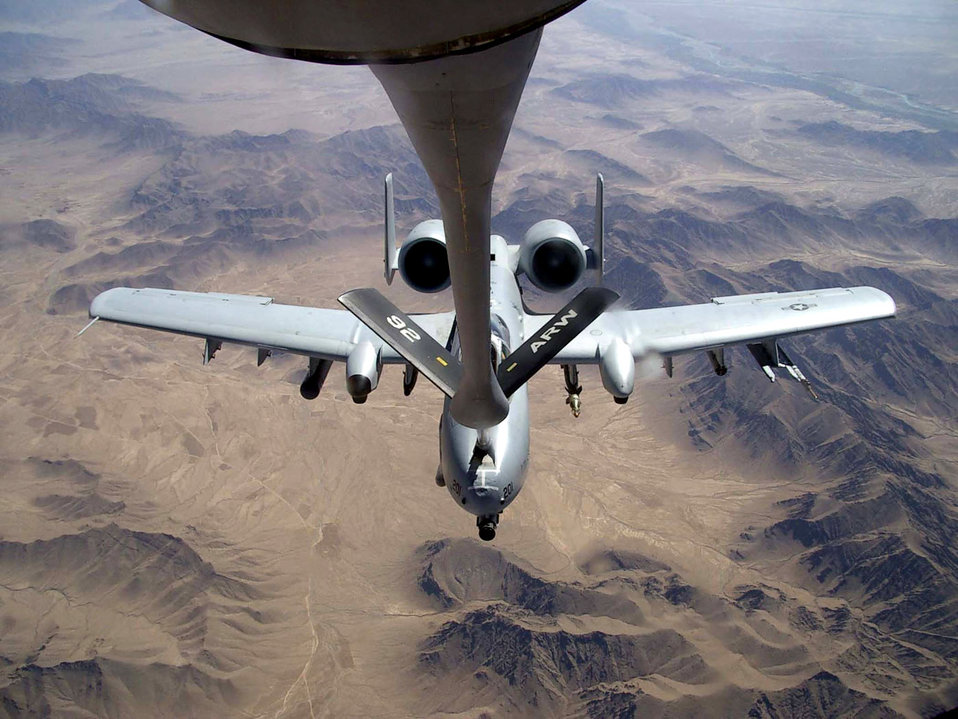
CENTAF Airpower summary for March 29, 2007

An A-10 Thunderbolt II receives fuel from a KC-135 Stratotanker from the 22nd Expeditionary Air Refueling Squadron over Afghanistan. The 22nd EARS is part of the 376th Air Expeditionary Wing, Manas Air Base, Kyrgyzstan.